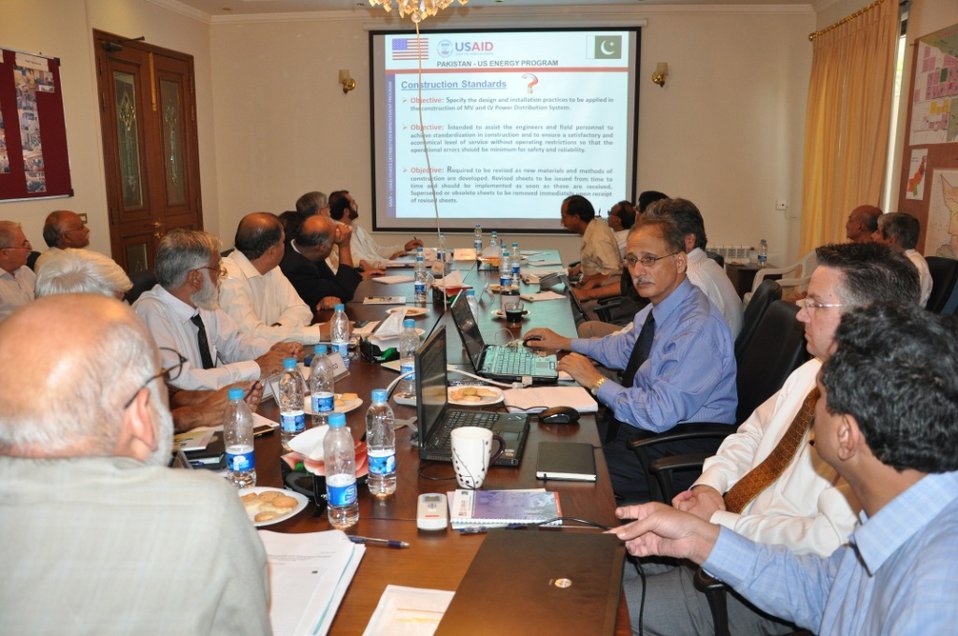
22 Sept, 2011 Engineering Workshop - Discussion on Engineering Strategies with DISCOs' Chief Engineers and NTDC 2

USAID's Power Distribution Improvement Program held a consultation workshop on September 22nd with the DISCO Chief Engineers and representatives from National Transmission and Dispatch Company (NTDC) to review and discuss new line materials to be introduced on the performance improvement projects, a strategy for developing an automatic metering infrastructure (AMI), and improvements needed to the current design and construction standards. At this meeting it was agreed to form a Standards Committee whose members would include representatives from each DISCO and NTDC along with PDP as an advisor.